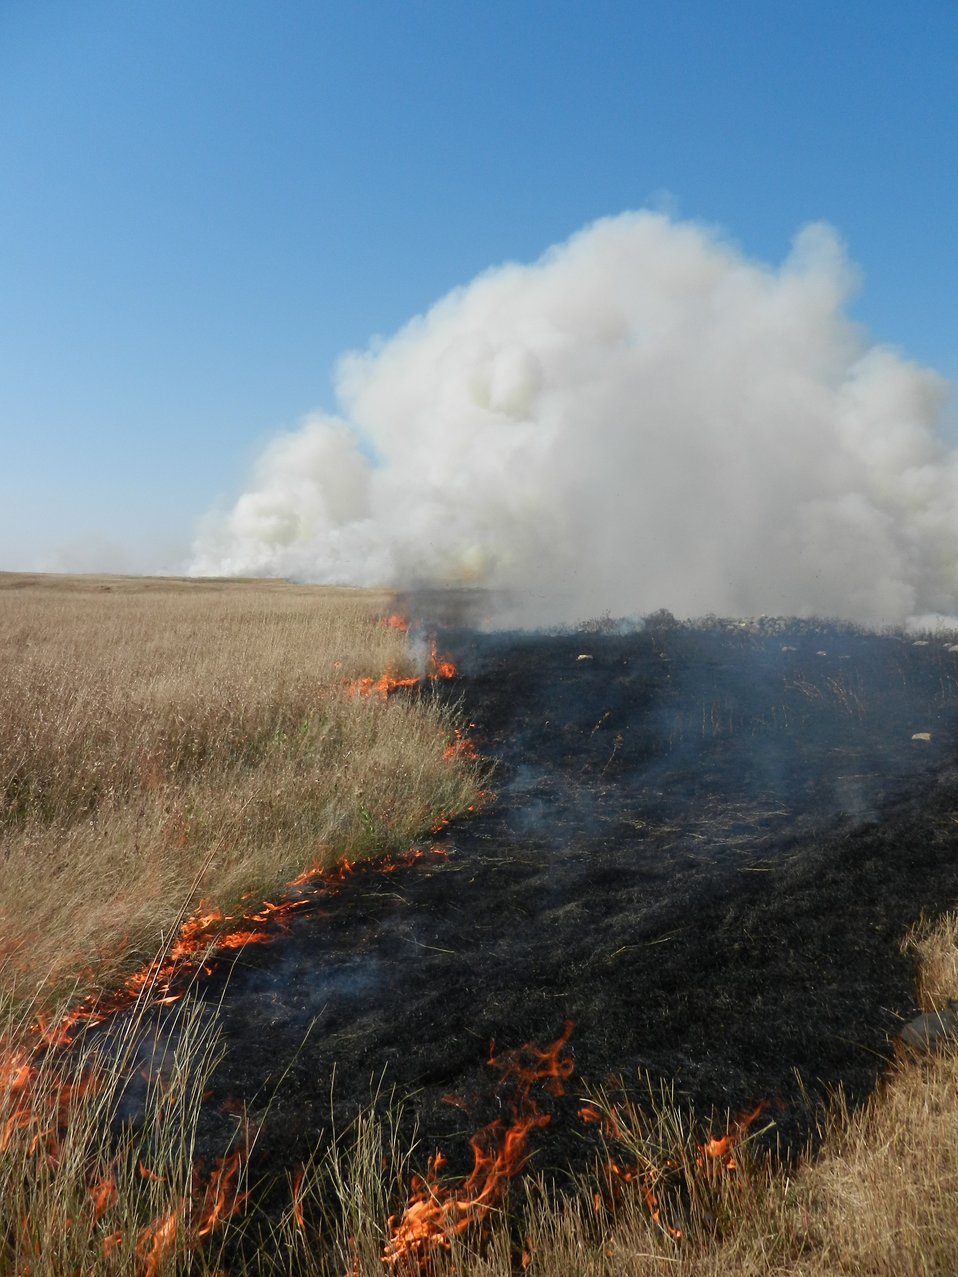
Fall Prescribed Burning on Des Lacs Refuge